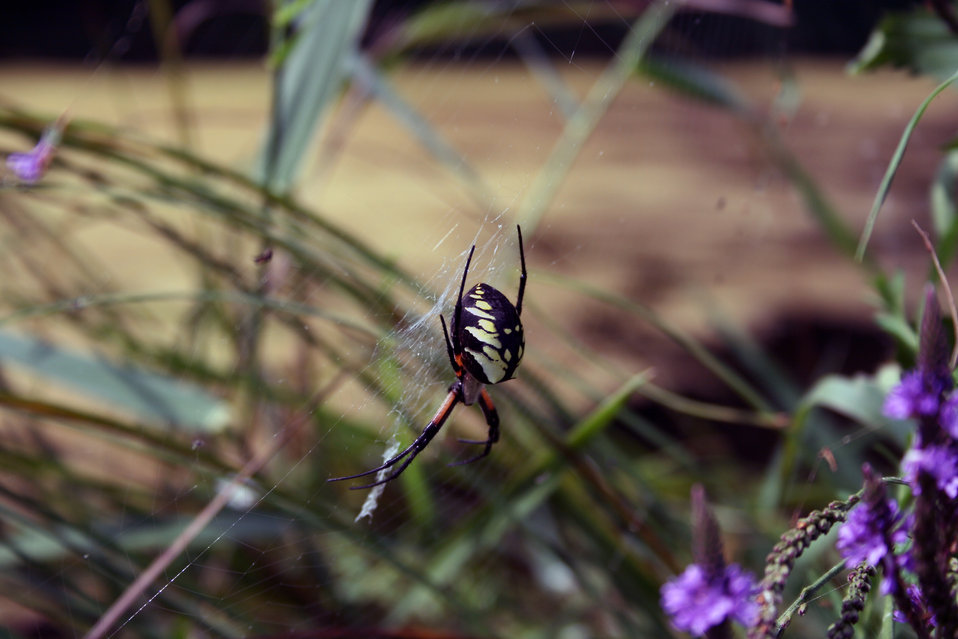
Garden Spider

The spider species Argiope aurantia is commonly known as the black and yellow garden spider, writing spider, or corn spider.